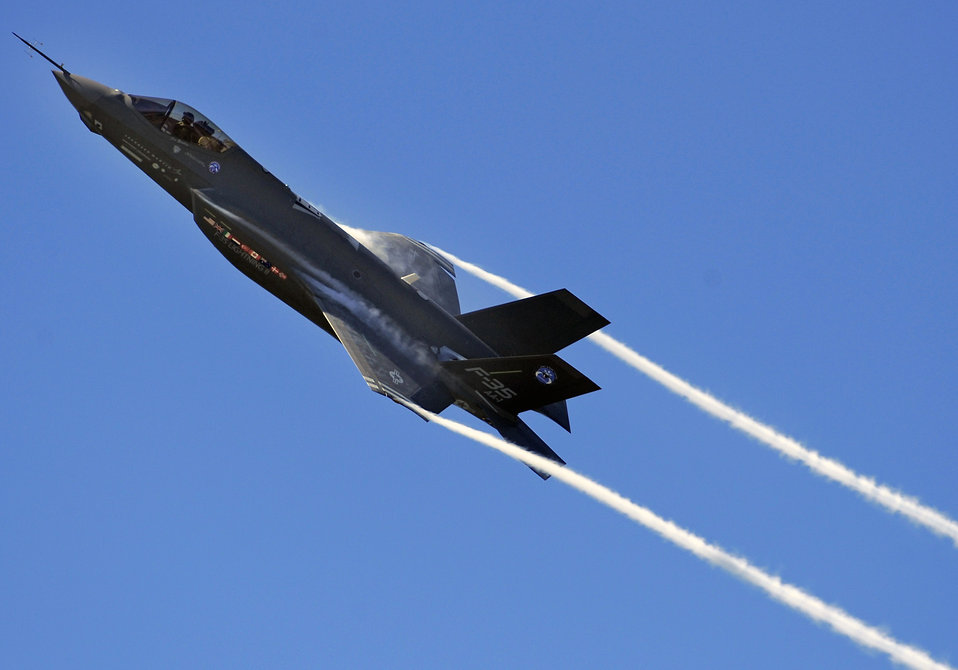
Streaking through the sky

An F-35 Lightning II Joint Strike Fighter test aircraft banks over the flightline at Eglin Air Force Base, Fla., April 23, sending contrails streaming off the wings. The aircraft is the first F-35 to visit the base which will be the future home of the JSF training facility.